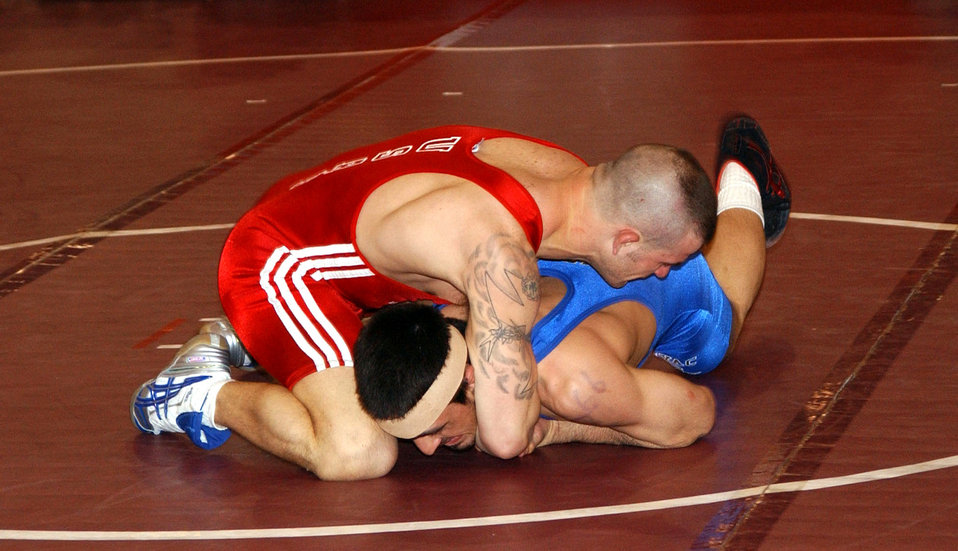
Airmen earn silver, bronze in wrestling championship

Jacob Hey pins down Marco Lara during a Greco-Roman style match at the U.S. Open Wrestling Nationals in Las Vegas. Sergeant Hey won a bronze medal in Greco-Roman. The staff sergeant from Scott Air Force Base, Ill. He competes in the 66 kilogram (145-pound) division, and placed second in Freestyle wrestling.